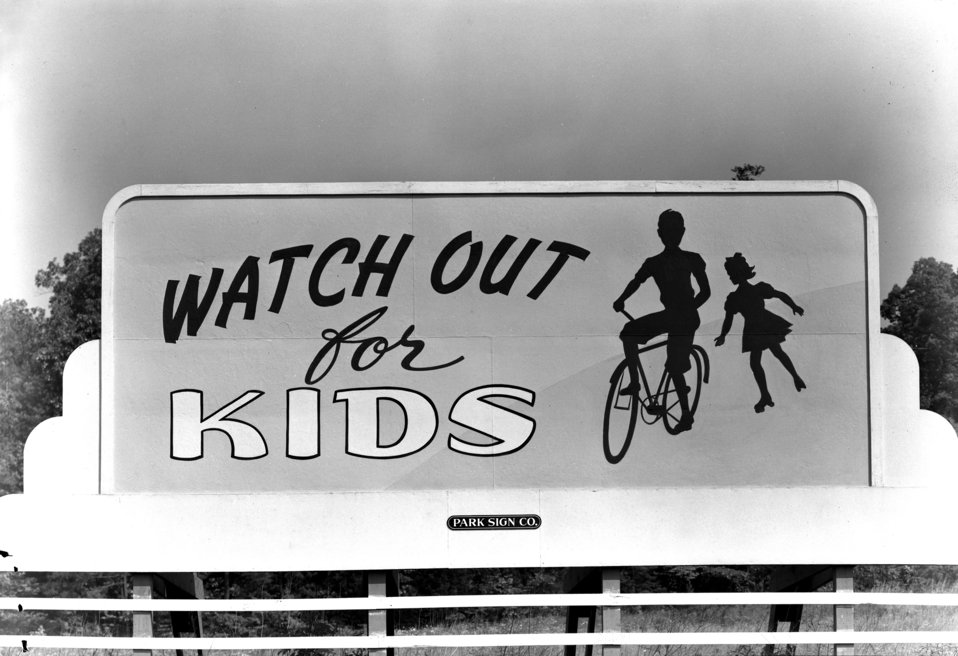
Saftey Billboard Oak Ridge 1948

5105 DOE photo Ed Westcott May 1948 Oak Ridge Tennessee